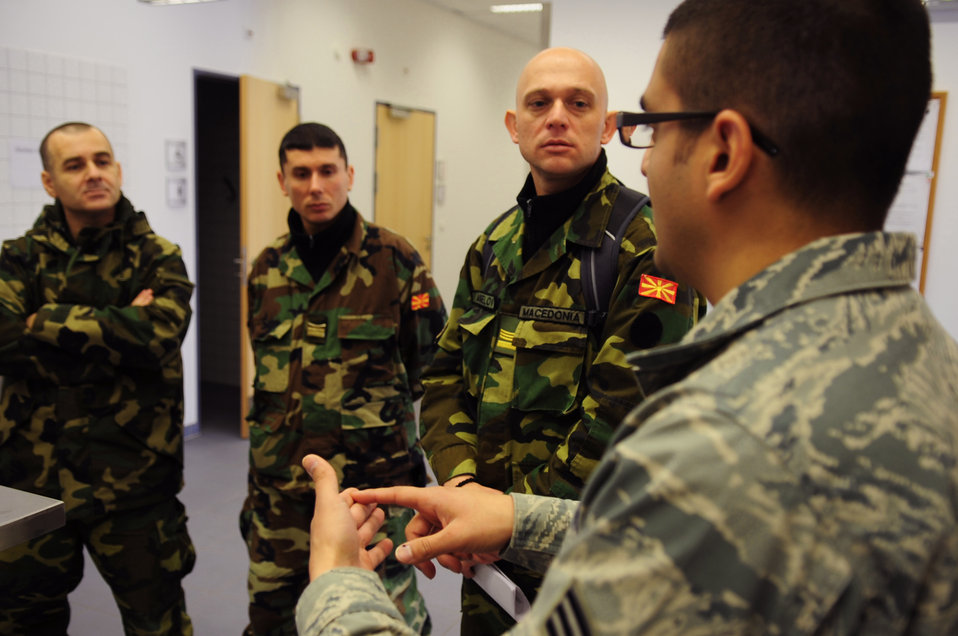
Airman describes procedures to members of the Republic of Macedonia army

Senior Airman Victor Camacho describes daily operation procedures to members of the Republic of Macedonia army Jan. 27, 2010, at Ramstein Air Base, Germany. Airman Camacho is a mission readiness spare package journeyman with the 86th Logistics Readiness Squadron.